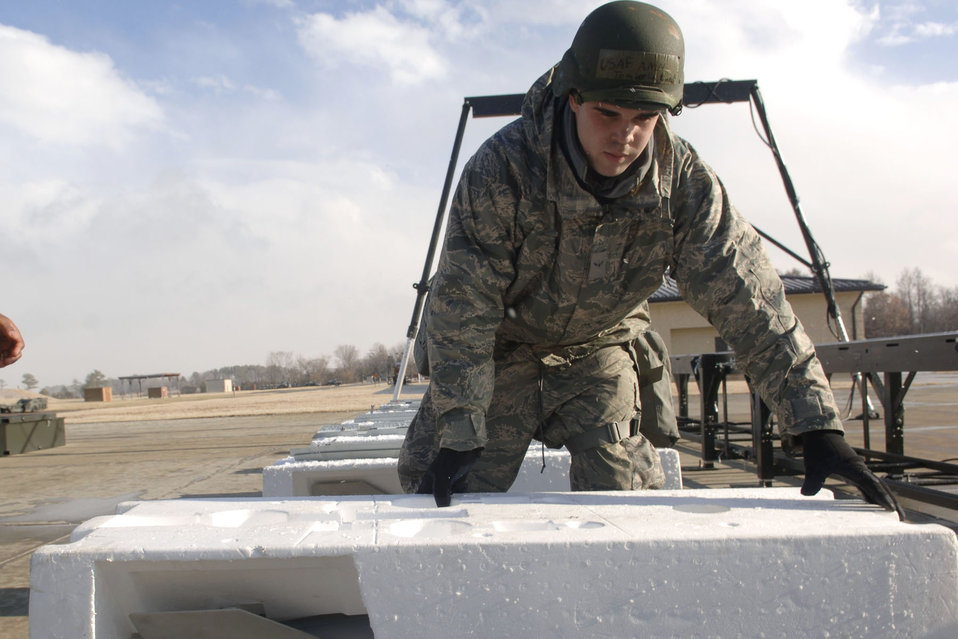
Langley Operational Readiness Exercise

Airman 1st Class Vincent Tomberlin handles munitions ready for transport during an operational readiness exercise Jan. 8, 2011, at Joint Base Langley Eustis, Va. The 1st Fighter Wing, 633rd Air Base Wing and 192nd Fighter Wing tested their readiness ability if faced with a disaster, imminent terrorist or enemy threat or short-notice orders to deploy. Airman Tomberlin is a weapons loader with the 1st Maintenance Squadron.